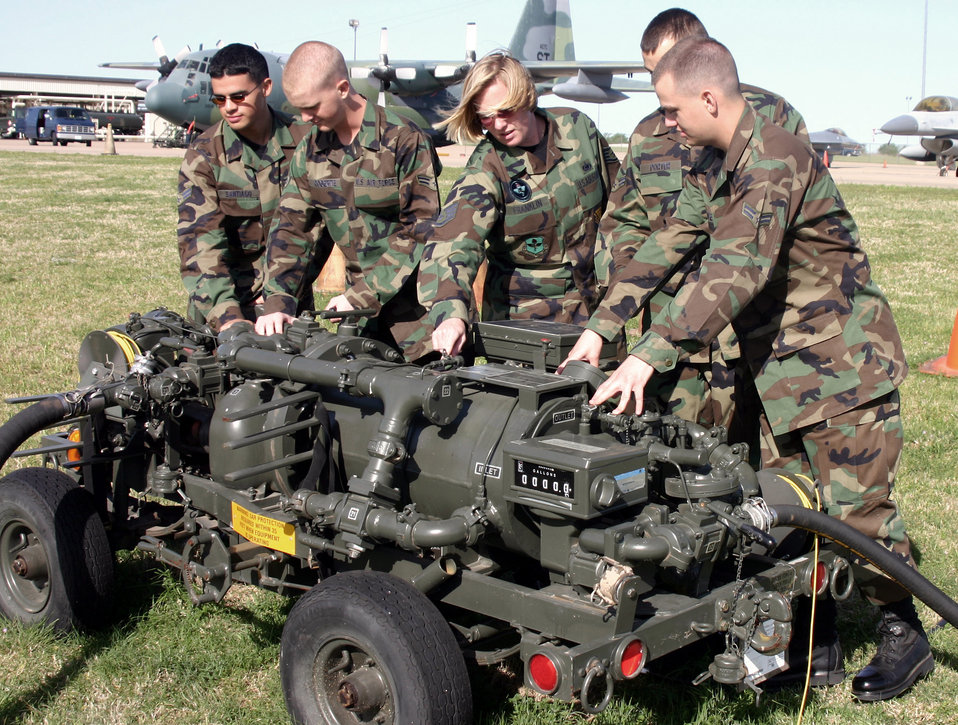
New course helps Airmen get combat ready

SHEPPARD AIR FORCE BASE, Texas -- Staff Sgt. Kathleen Franklin discusses the pump used for a mobile gas station with students in the fuels apprentice course here. Airmen attending the course are now required to complete a seven-day contingency course, getting them two to three months closer to combat-ready status after arriving at their first base. Sergeant Franklin is an instructor with the 366th Training Squadron.